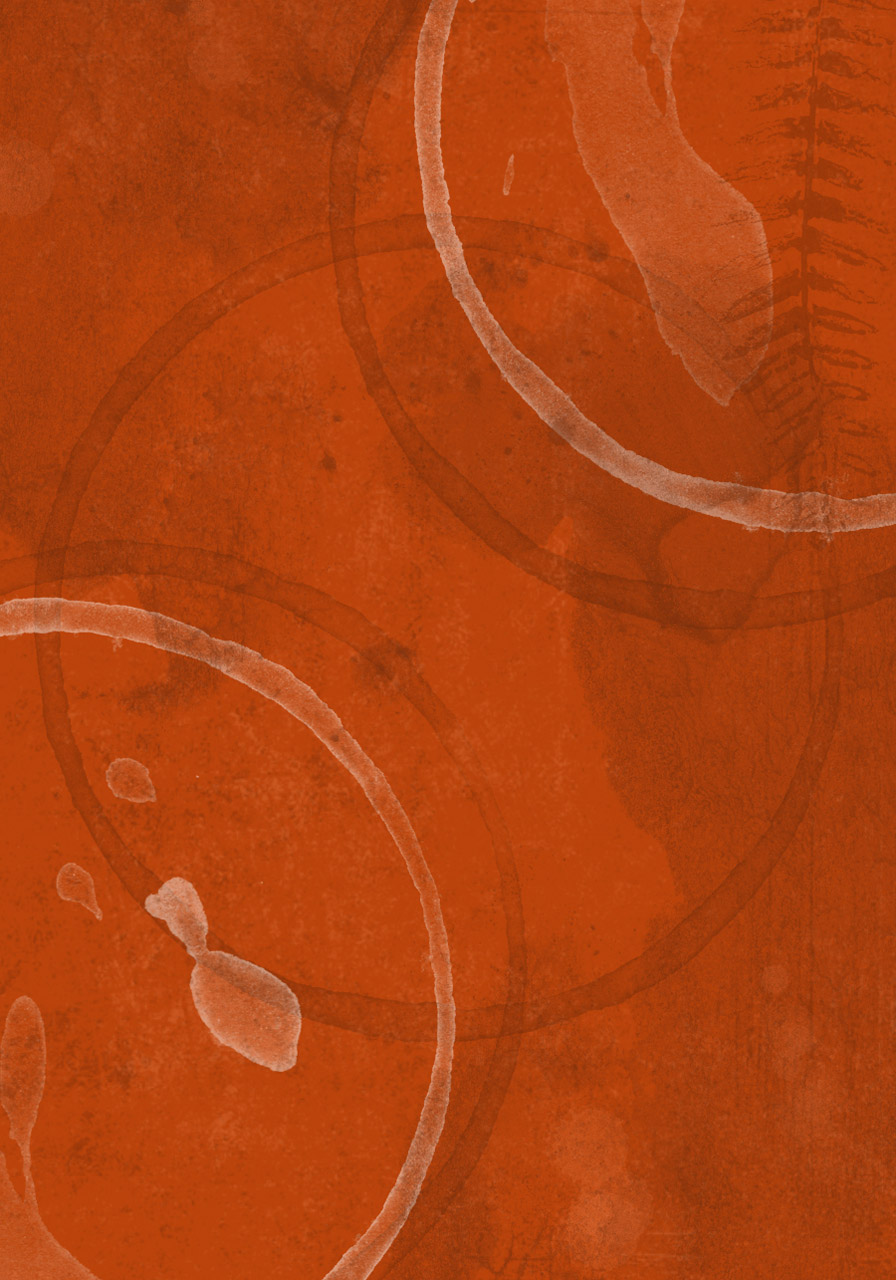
Rusty background

Orange (rust) coloured background with leaf prints.